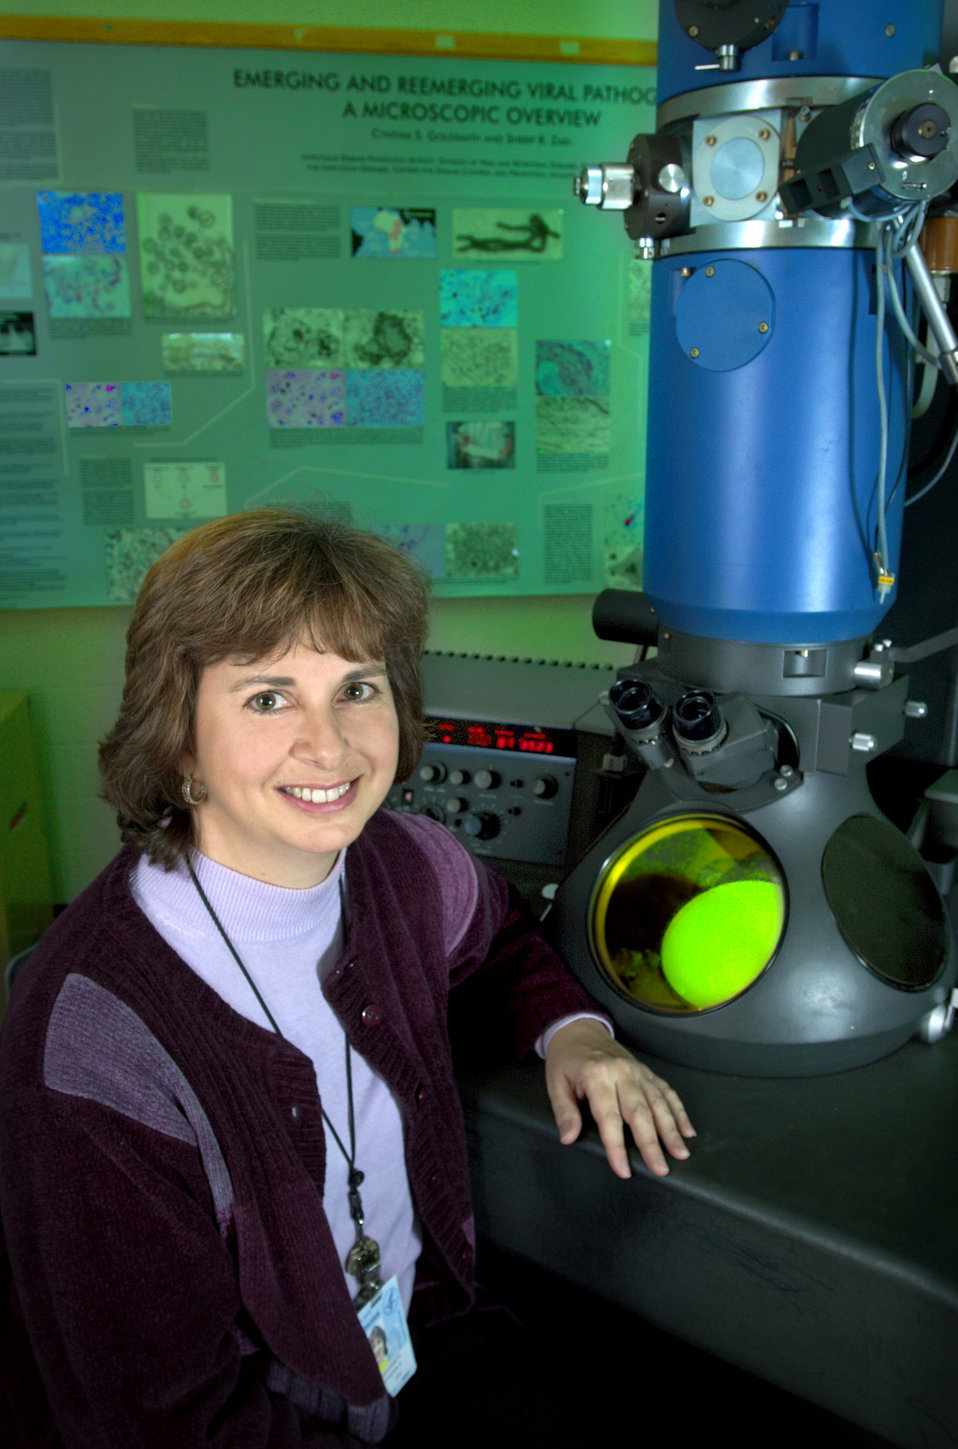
Cynthia Goldsmith, a CDC research biologist, electron microscopist, was shown here sitting in front of a transmission electron microscope (TEM) in 2004.